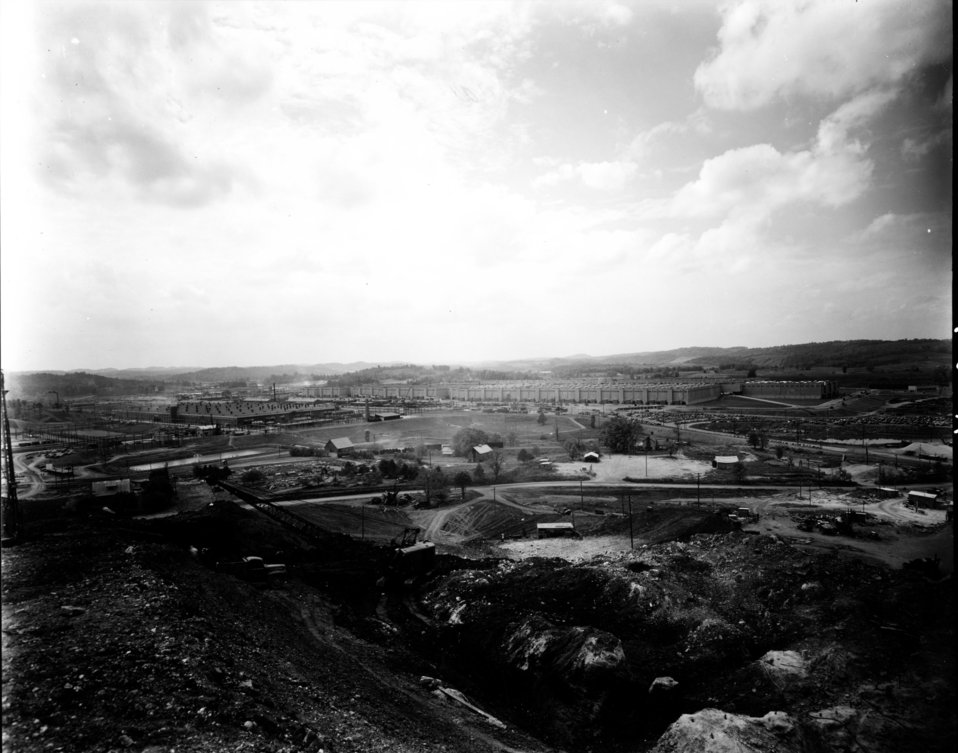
K-25 at Oak Ridge